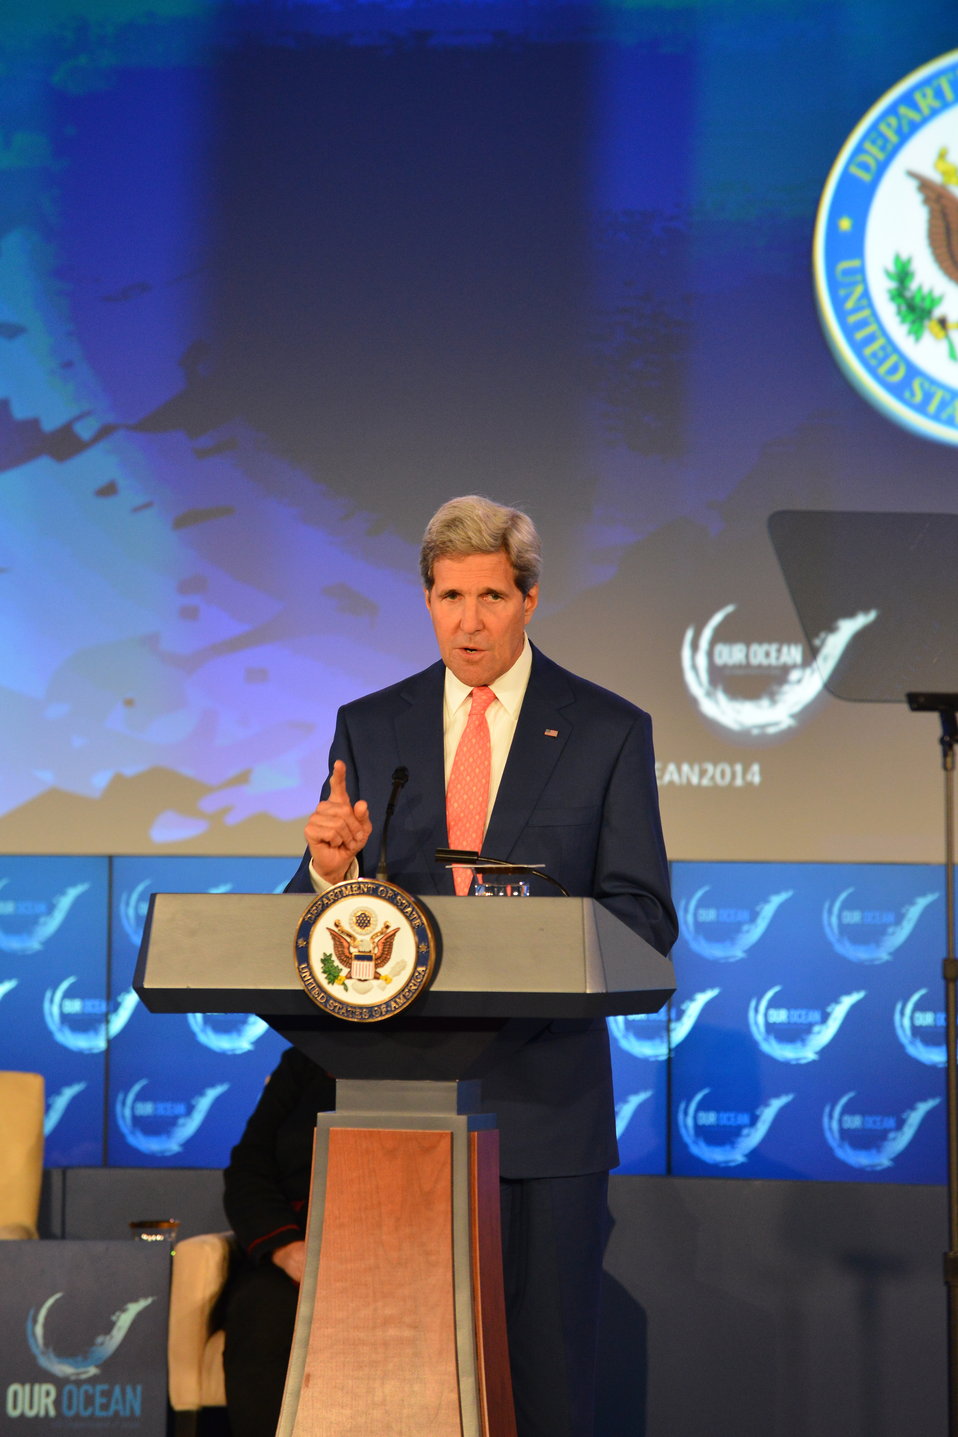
Secretary Kerry Delivers Remarks at the Opening Session of the 'Our Ocean' Conference

U.S. Secretary of State John Kerry delivers remarks at the opening session of the 2014 'Our Ocean' conference at the U.S. Department of State in Washington, D.C. on June 16, 2014.